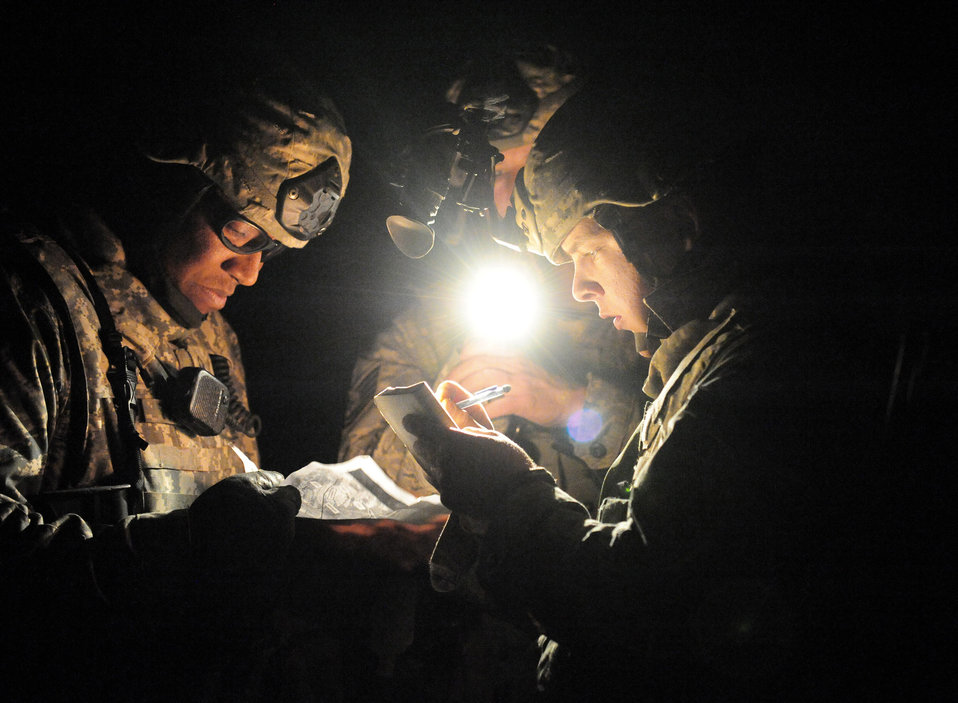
Desert Eagle

Members of the 822nd Base Defense Squadron write down a description of weapons found in a cache March 15, 2011, during Desert Eagle at the Nevada Test and Training Range.